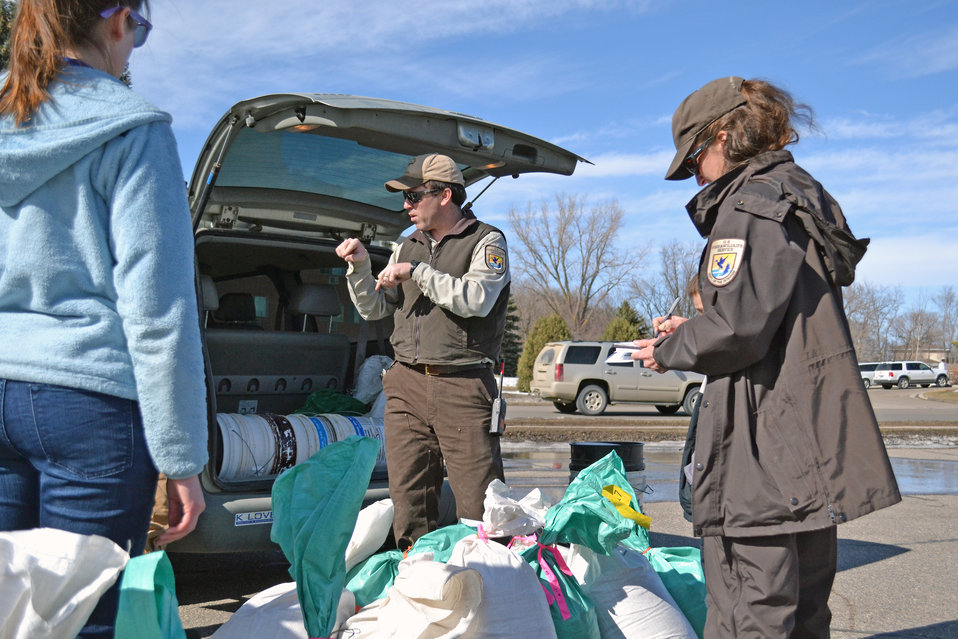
Prepping

Partners for Fish and Wildlife biologist Shawn Papon welcomed snow seed sowers in the Grace United Methodist Church parking lot and explained the restoration project.